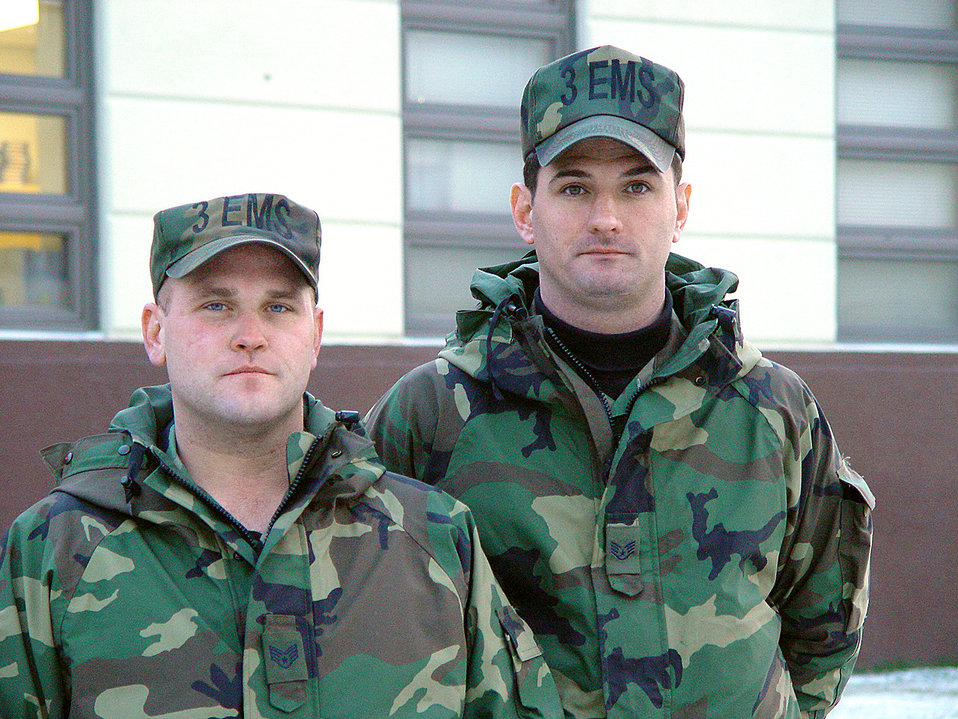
Dynamic duo

ELMENDORF AIR FORCE BASE, Alaska (AFPN) -- Staff Sgts. Joseph Harder (left) and William Young helped Anchorage police catch a truck thief. The sergeants first chased the bandit in their truck. Then Sergeant Harder jumped out and chased the suspect on foot -- and caught him at a school. The duo is with the 3rd Equipment Maintenance Squadron.